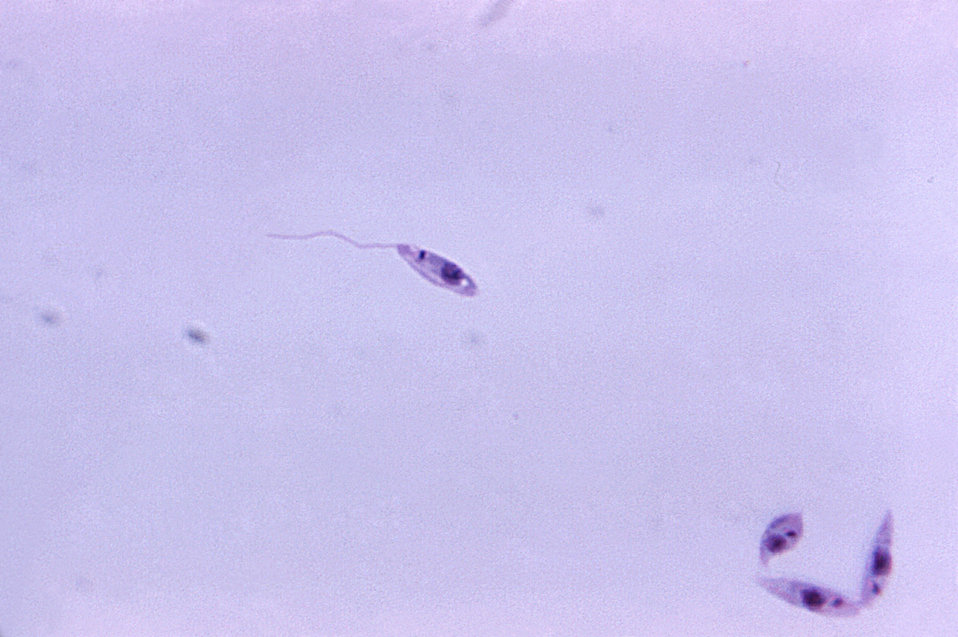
This micrograph revealed the presence of a number of leptomonad-staged, i.e. promastigote, Leishmania sp. protozoa.